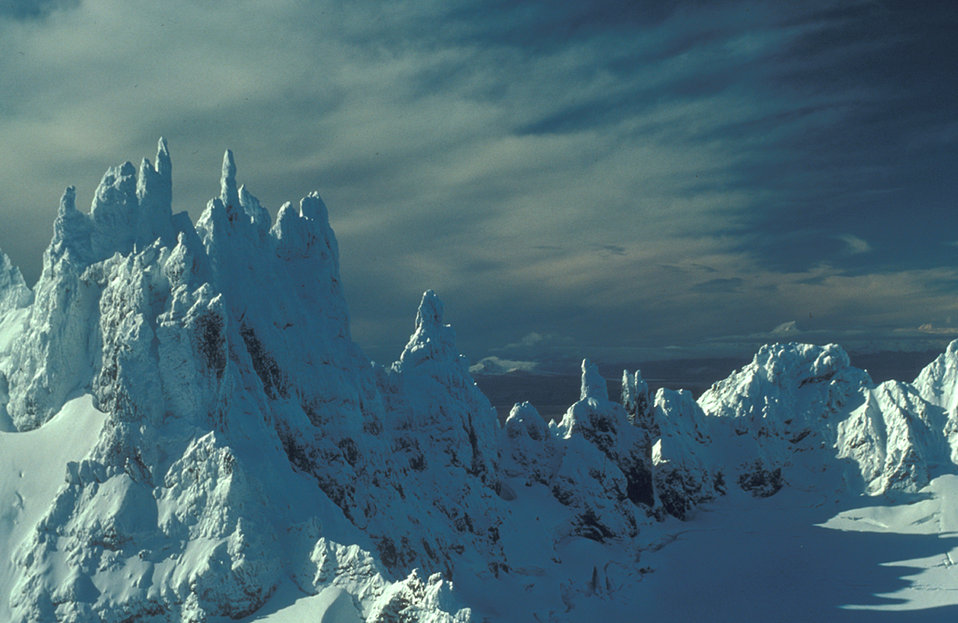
Aghileen Pinnacles

Aerial view of the snow-covered Aghileen Pinnacles.